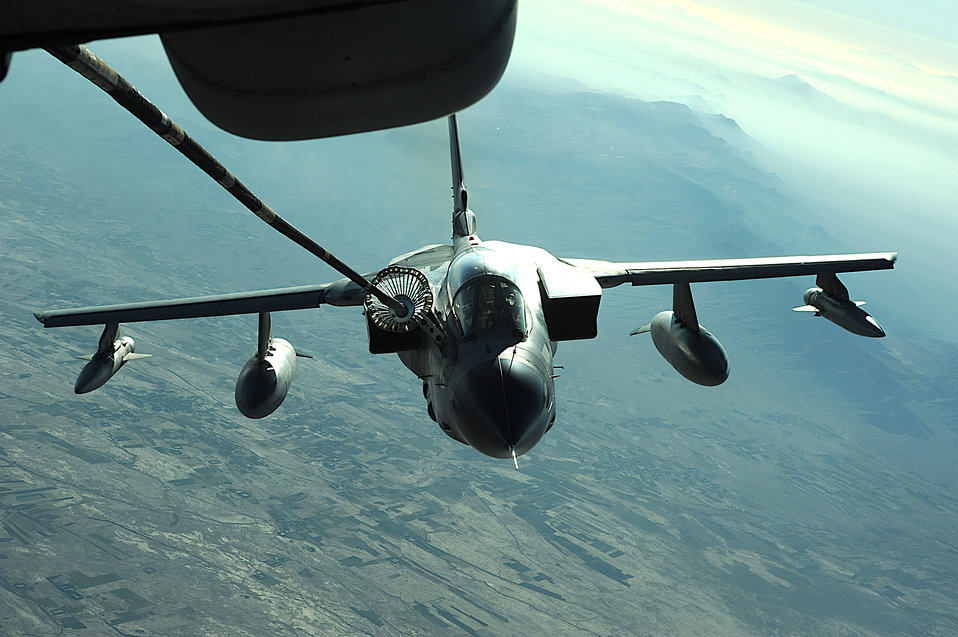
Fuel for fighters

A KC-10 Extender from the 908th Expeditionary Aerial Refueling Squadron refuels a Tornado Dec. 11 over Afghanistan. Using either an advanced aerial refueling boom, or a hose and drogue centerline refueling system, the KC-10 can refuel a wide variety of U.S. and allied military aircraft within the same mission.